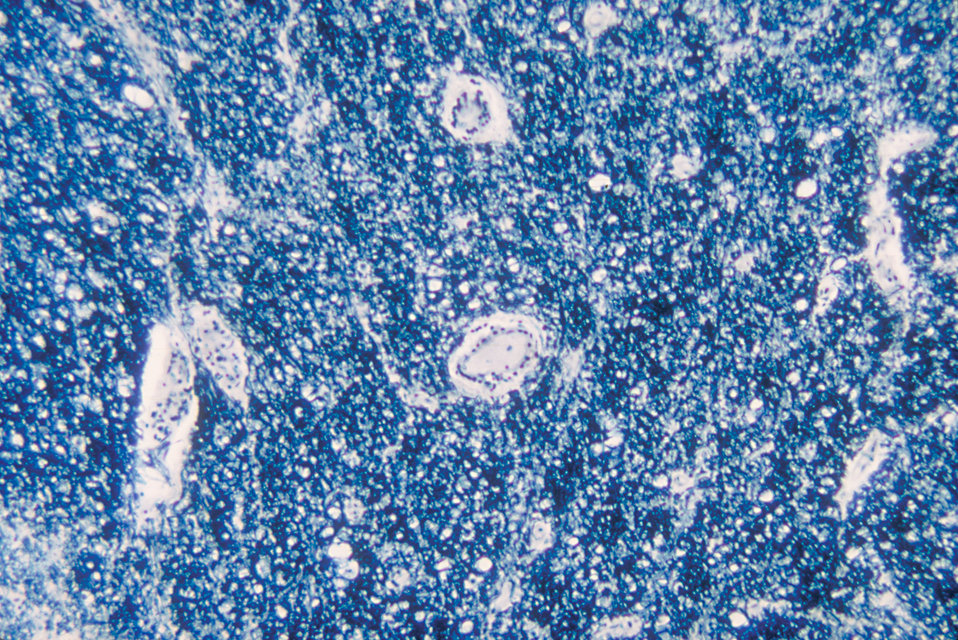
A photomicrograph of the cervical spinal cord in the region of the anterior horn revealing Polio Type III degenerative changes.